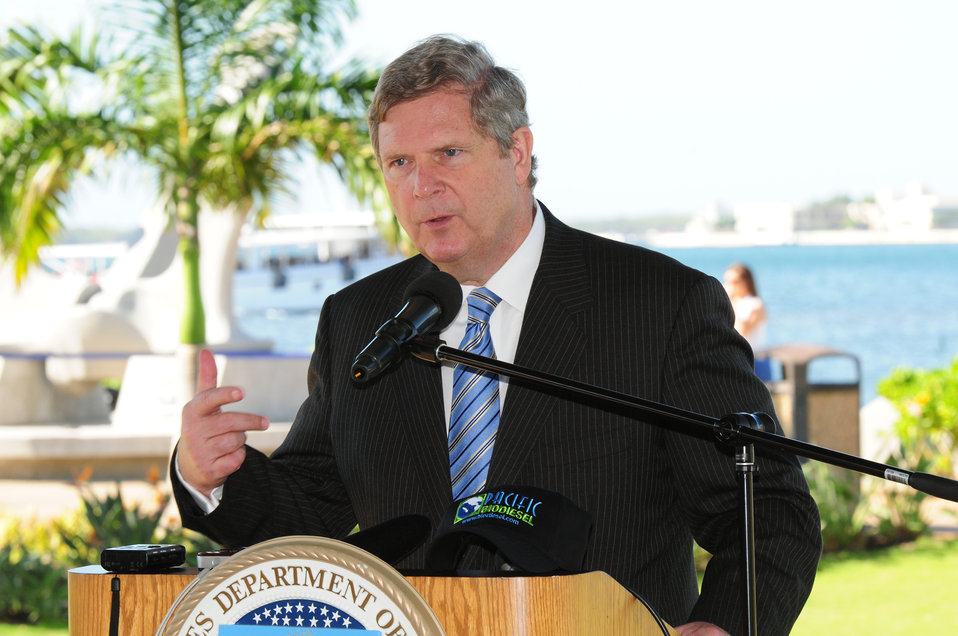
Agriculture Secretary Tom Vilsack highlights the Obama Administration's commitment to renewable energy at the.World War II Valor in the Pacific National Monument's Pearl Harbor Visitor Center. Pearl Harbor naval base was the first Hawaii military marine fleet to use biodiesel, replacing the Department of Navy-operated tour boats that shuttled visitors to and from the USS Arizona Memorial with five new boats capable of running on 100% biodiesel. Near Honolulu, HI, on Tuesday, January 10, 2012.